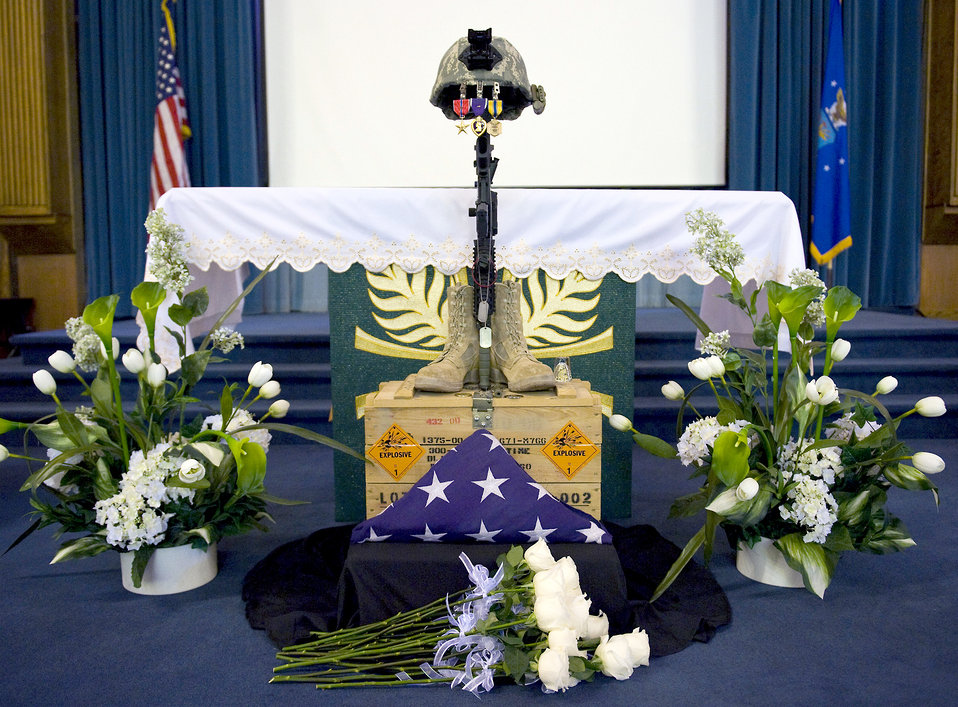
SrA Buras memorial

Hundreds of people gathered at the base chapel for a memorial service for Senior Airman Michael Buras Oct. 15, 2010, at Nellis Air Force Base, Nev. Airman Buras was an explosive ordnance disposal journeyman assigned to the 99th Civil Engineer Squadron when he was killed in action while responding to a roadside bomb Sept. 21, 2010, in Afghanistan.